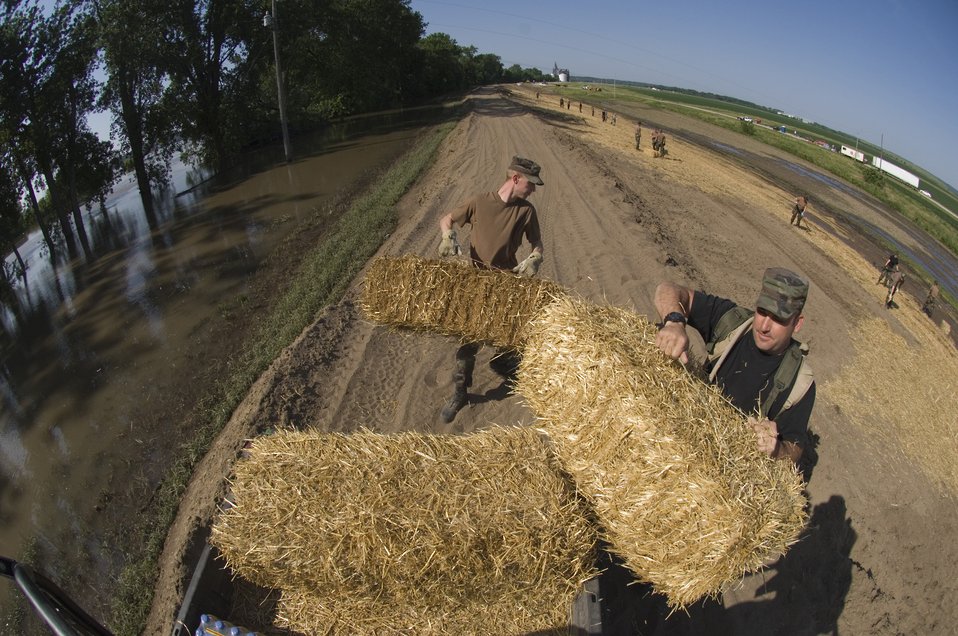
Air Guard prevents erosion

Staff Sgts. Troy Martin (right) and Cody Sorenson unload bails of hay to be used for erosion control near the Mississippi River June 18 in Burlington, Iowa. Approximately 14,000 acres of farmland is in danger of erosion if the flooding is not controlled. Sergeants Martin and Sorenson are both assigned to the Iowa Air National Guard's 185th Services Squadron in Sioux City, Iowa.